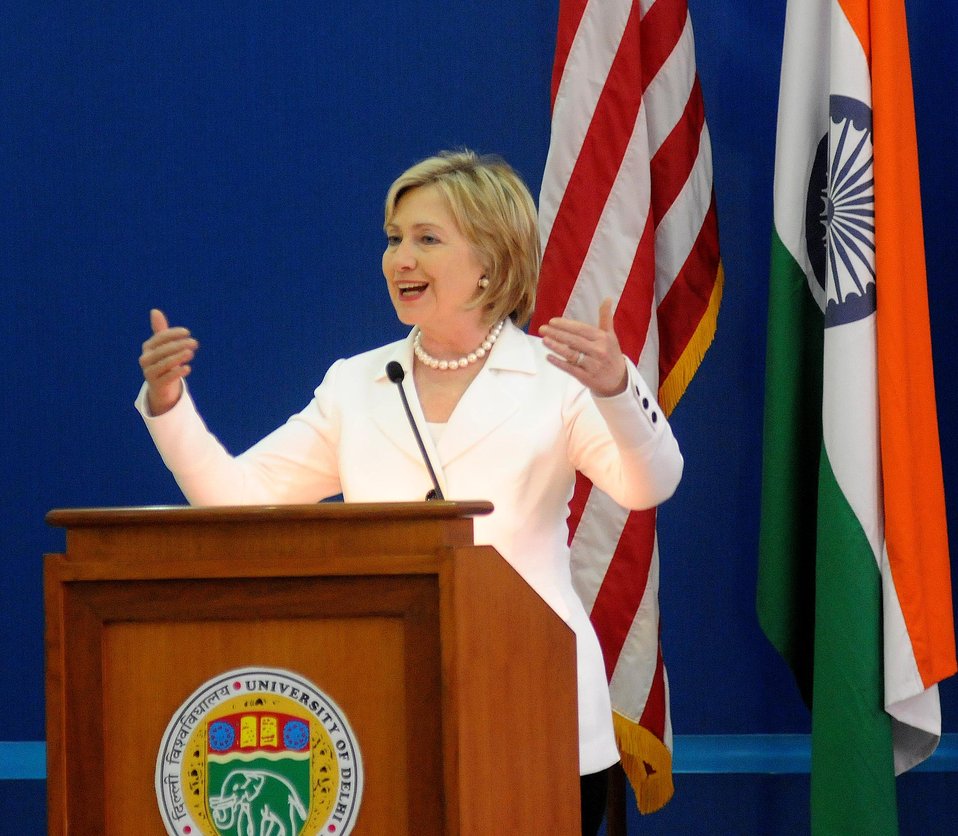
Secretary Clinton Speaks at University of Delhi

U.S. Secretary of State Hillary Rodham Clinton speaks at the University of Delhi in New Delhi, India July 19, 2009.